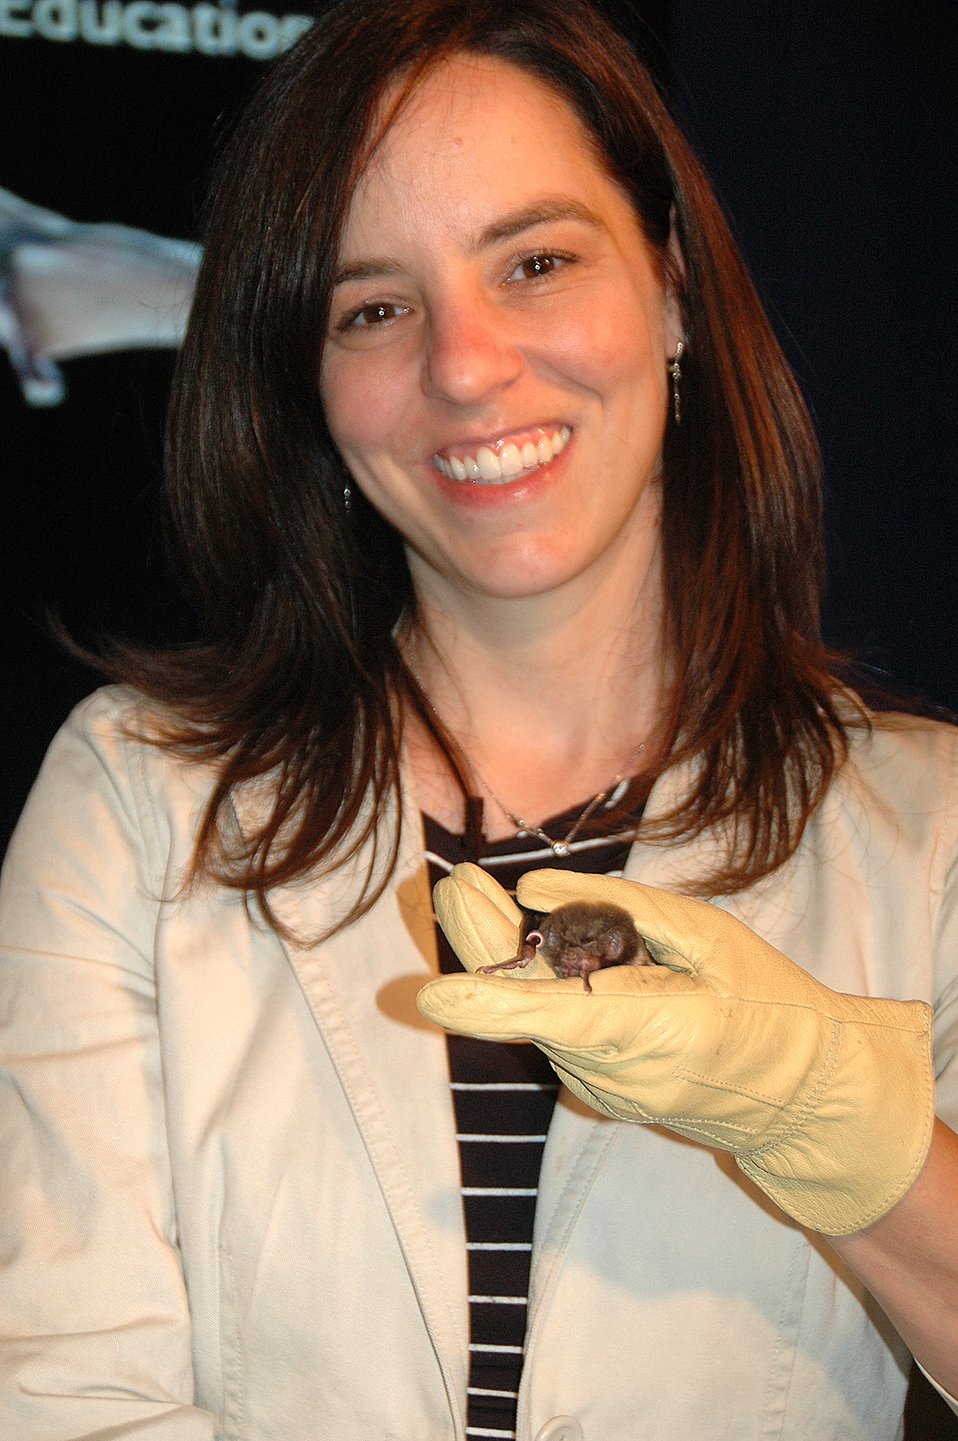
Ann Froschauer with a common vampire bat

Ann Froschauer (USFWS) with a common vampire bat at the BatsLIVE! Distance Learning Adventure dress rehearsal

www.batconservation.org/drupal/common vampire